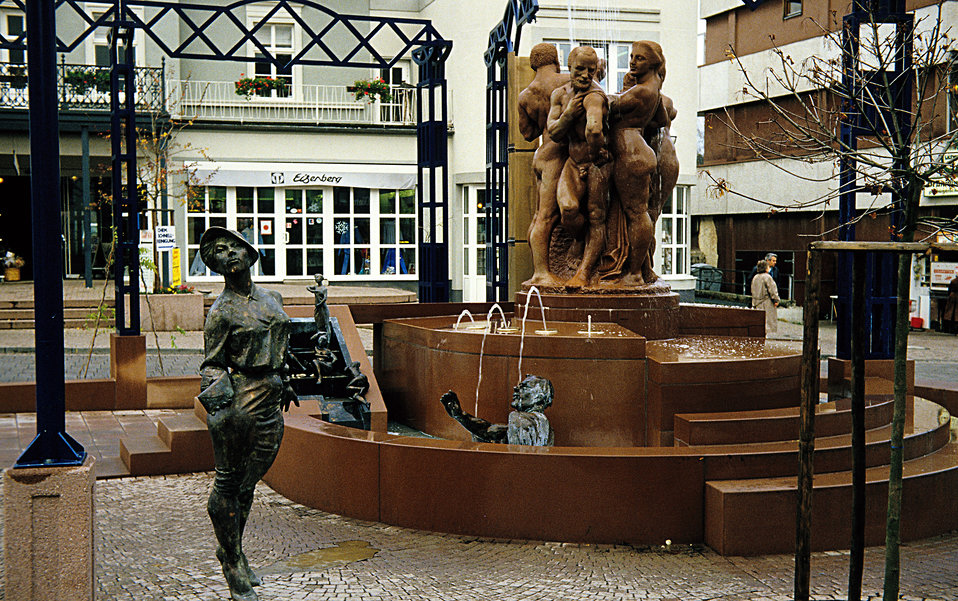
Deutsch: Bad Wildungen Kurschattenbrunnen